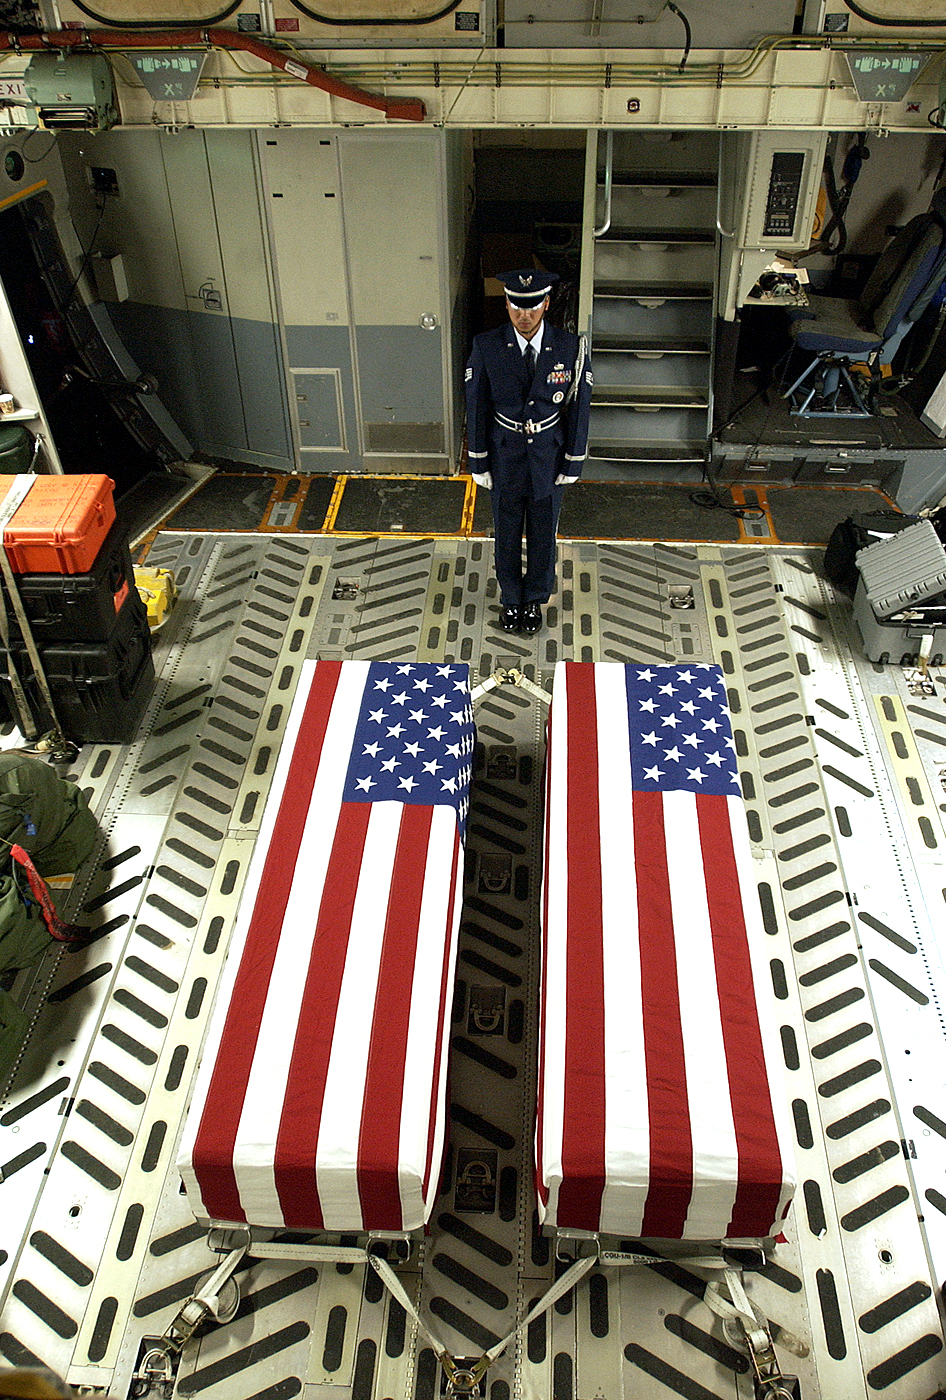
Return with honor

ANDERSEN AIR FORCE BASE, Guam (AFPN) -- Staff Sgt. Gilbert Anacleto, 734th Air Mobility Squadron, stands guard over two fallen American servicemembers from the Vietnam War whose remains are on their way to Hawaii for identification. Sergeant Anacleto is a member of the Blue Knights Honor Guard.